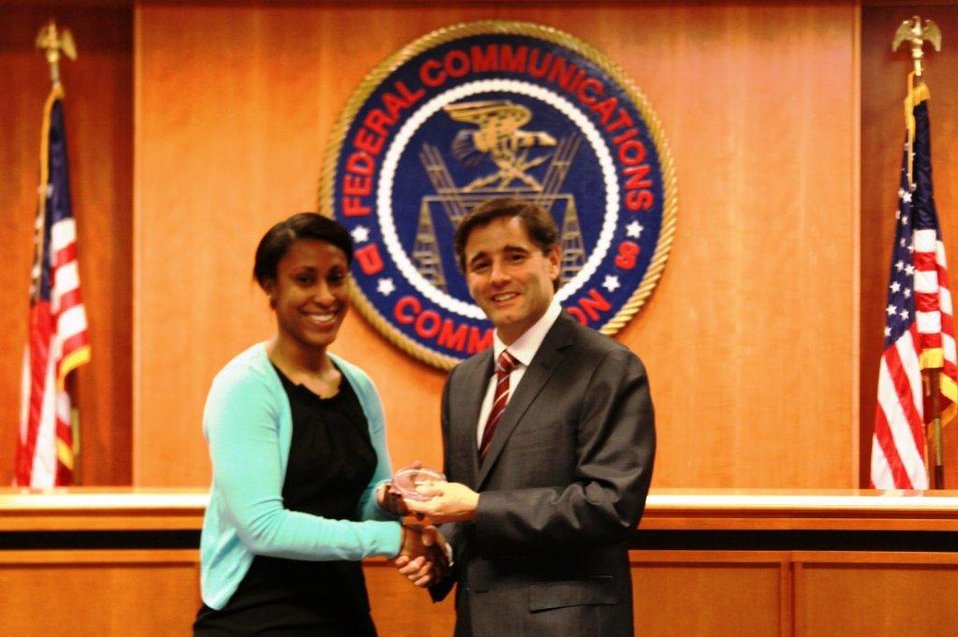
Adrienne Biddings, Google, Accepts Consumer Empowerment Information Honorable Mention

Adrienne Biddings, accepts Consumer Empowerment Information Honorable Mention from Chairman Genachowski for Google.